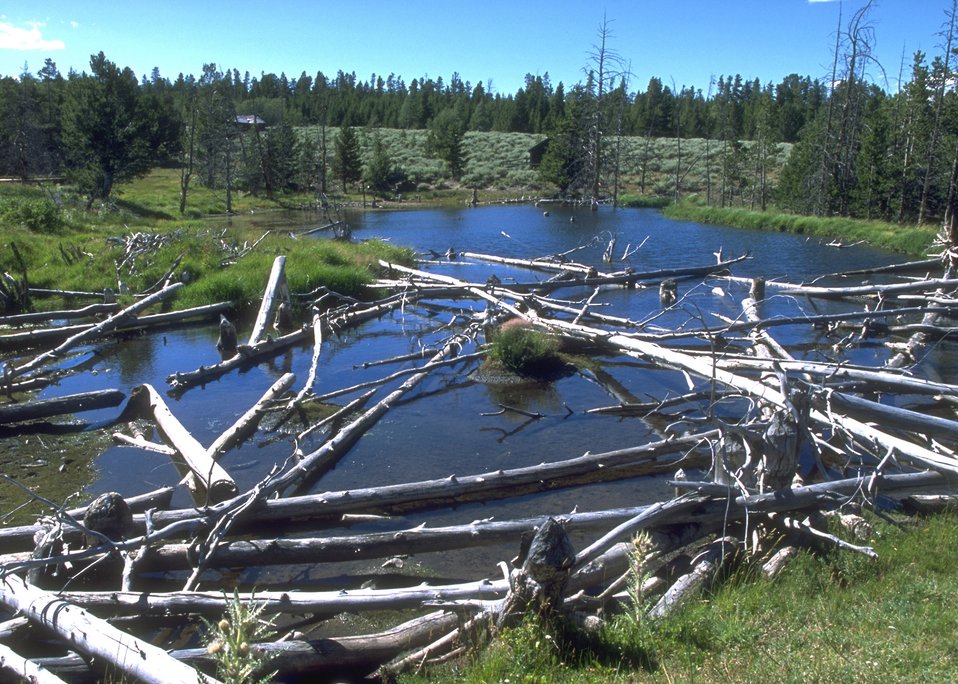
Beaver pond and structure at Miners Delight, Lander Field Office.